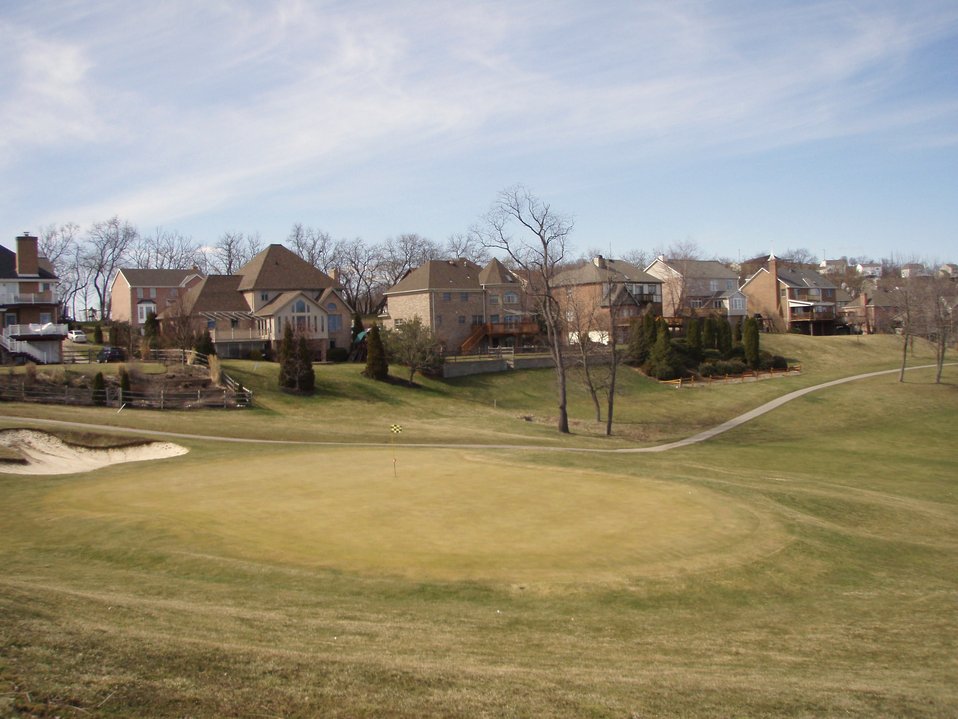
View of Hickory Heights PA from the Ninth Green of the Course.